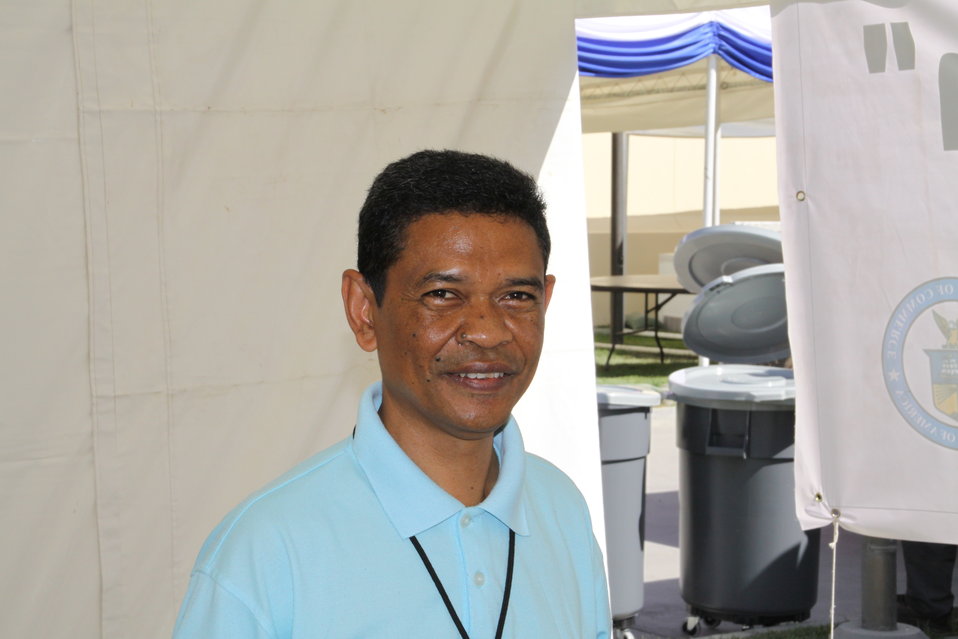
Official July 4th Event Preparation